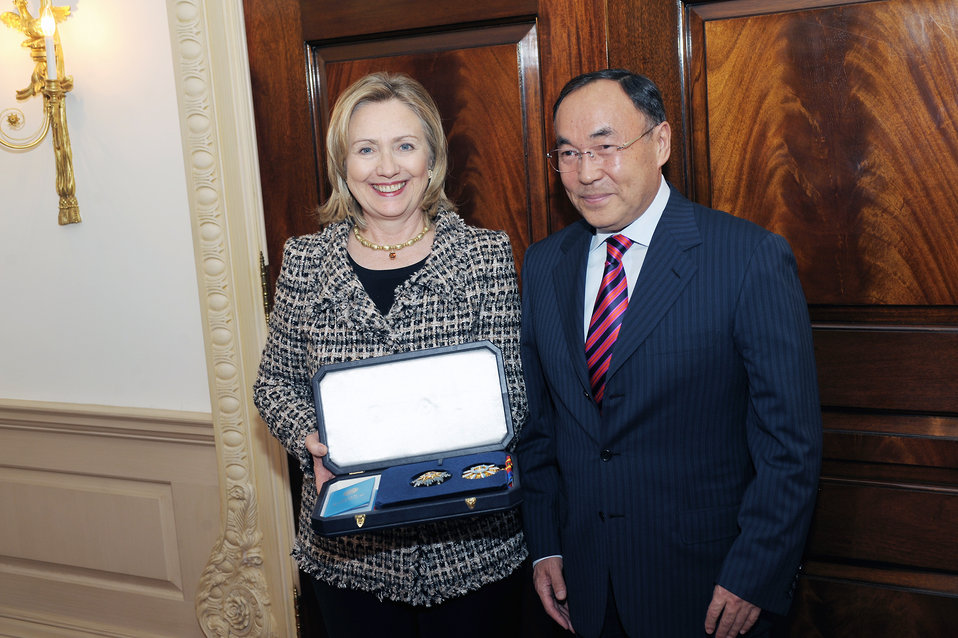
Secretary Clinton Accepts the Dostyk from Kazakhstan Foreign Minister Saudabayev

U.S. Secretary of State Hillary Rodham Clinton accepts the Dostyk Award from Kazakhstan Foreign Minister Kanat Saudabayev at the U.S. Department of State in Washington, D.C., on January 25, 2011.